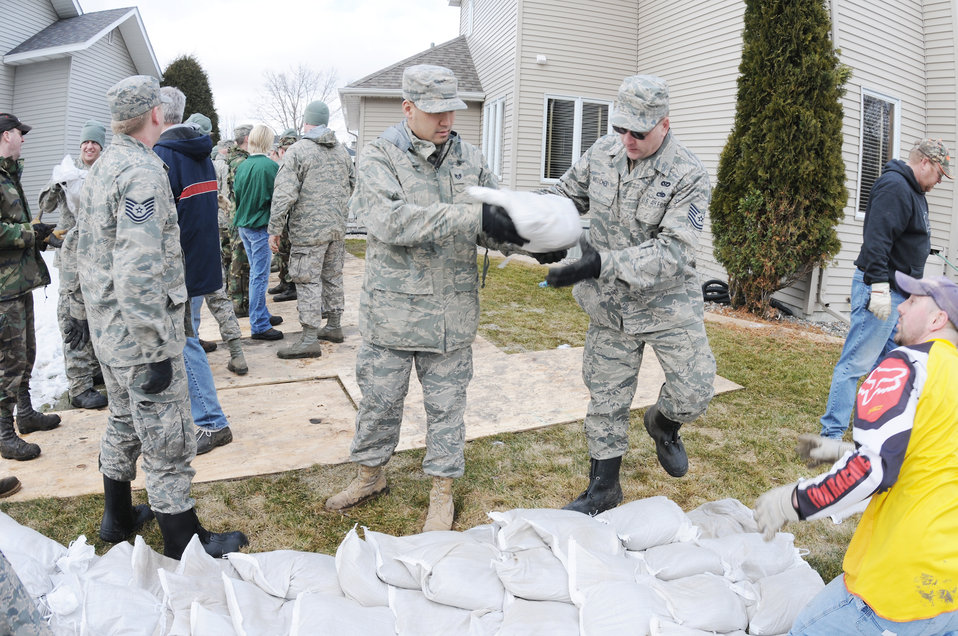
Fighting rising water in Fargo

Airmen place sandbags onto a flood barrier March 16, 2010 in Fargo, N.D. The sandbag dike is being built in the backyards of homes along the Red River in Fargo. Both Airmen are assigned to the North Dakota Air National Guard's 119th Fighter Wing.